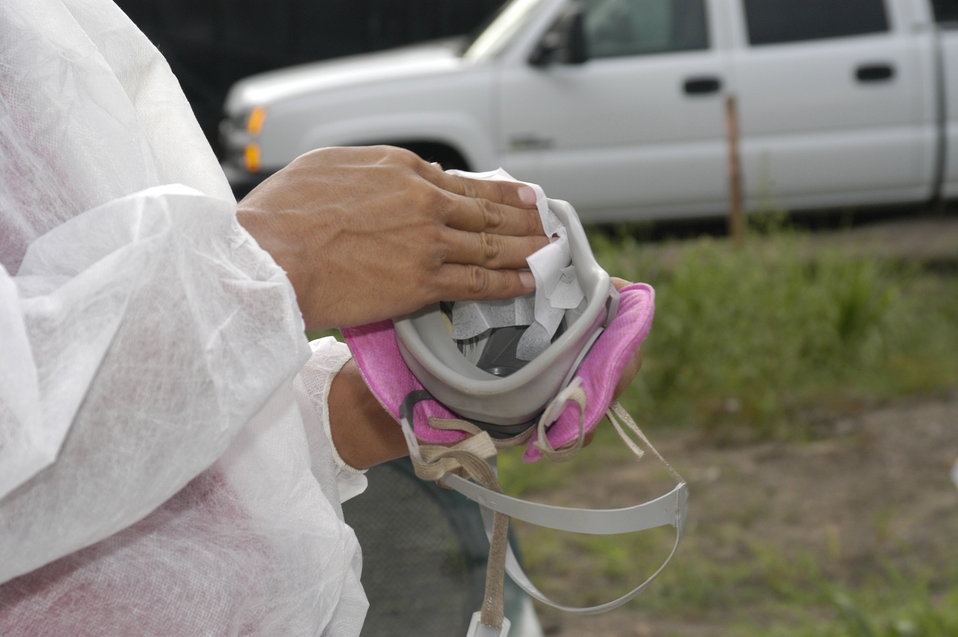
Many of the older homes and buildings in the New Orleans, LA, locale that were destroyed by Hurricane Katrina contained asbestos material (i.e. asbestos roofing tiles, transite siding, insulation, floor tiles, and popcorn ceilings). The U.S. Army Corps of Engineers (USACE) was mandated to follow strict environmental protocols in the demolition of these homes that were designated Regulated Asbestos Containing Material (RACM) demos. Personnel working inside the “hot zone” wore special suits with a respirator to prevent ingestion of asbestos particulates that might become airborne during the demolition project.